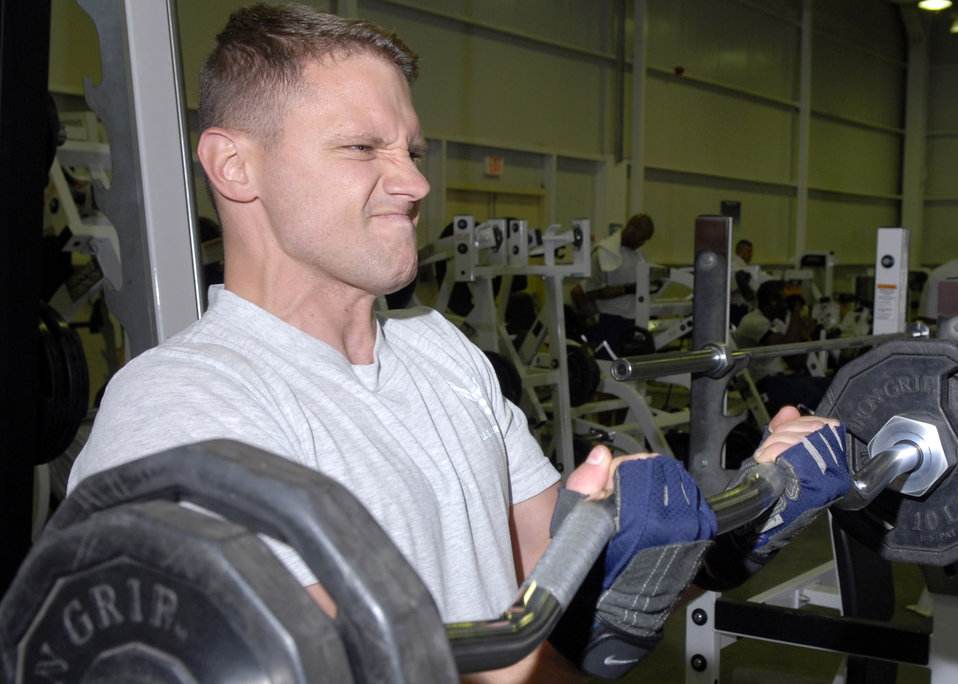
Staying fit for the fight

Capt. Craig Towell lifts a curl bar to exercise his biceps at the fitness center at Balad Air Base, Iraq, Oct. 19. Captain Towell, who is deployed from Mountain Home Air Force Base, Idaho, alternates his work out routine daily to focus on different muscle groups. He is assigned to the 727th Expeditionary Air Control Squadron.